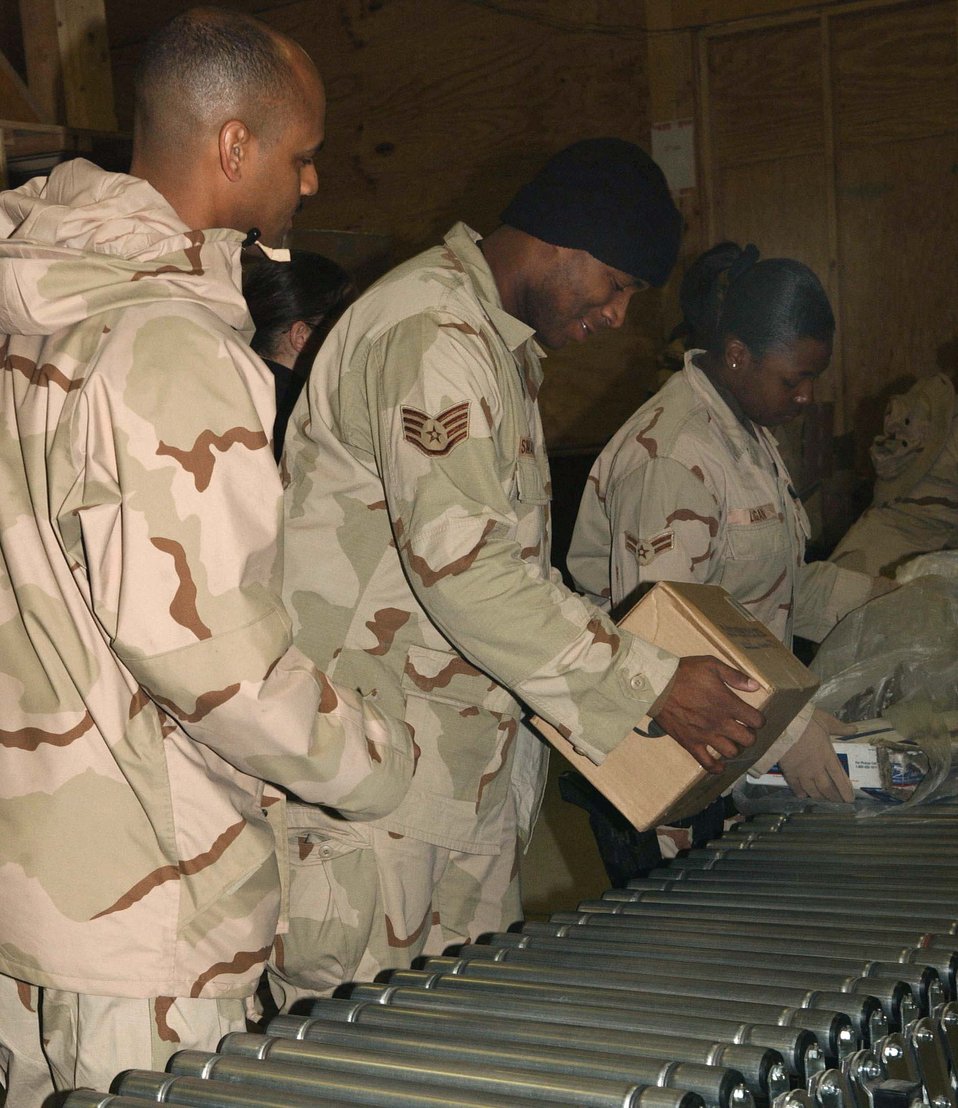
Bagram mail team delivers

BAGRAM AIR BASE, Afghanistan -- Airmen of the mail team here work together to keep the mail flowing to their fellow servicemembers. Postal workers process between 15,000 and 50,000 pounds of mail daily.